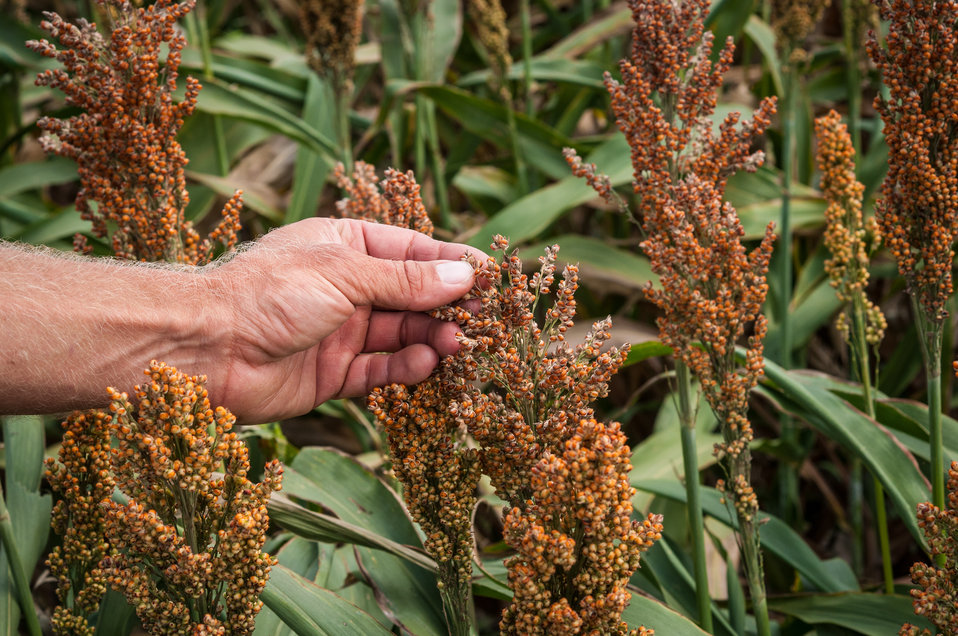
Michael Popp (pronounced Pope) shows the milo (grain sorghum) grown at Popp Farms 05 in El Campo, TX on Jun. 20, 2013. Michael is a junior partner in the 2,400-acre operation that also grows cotton. The farms are part of the United Agricultural Cooperative, Incorporated.